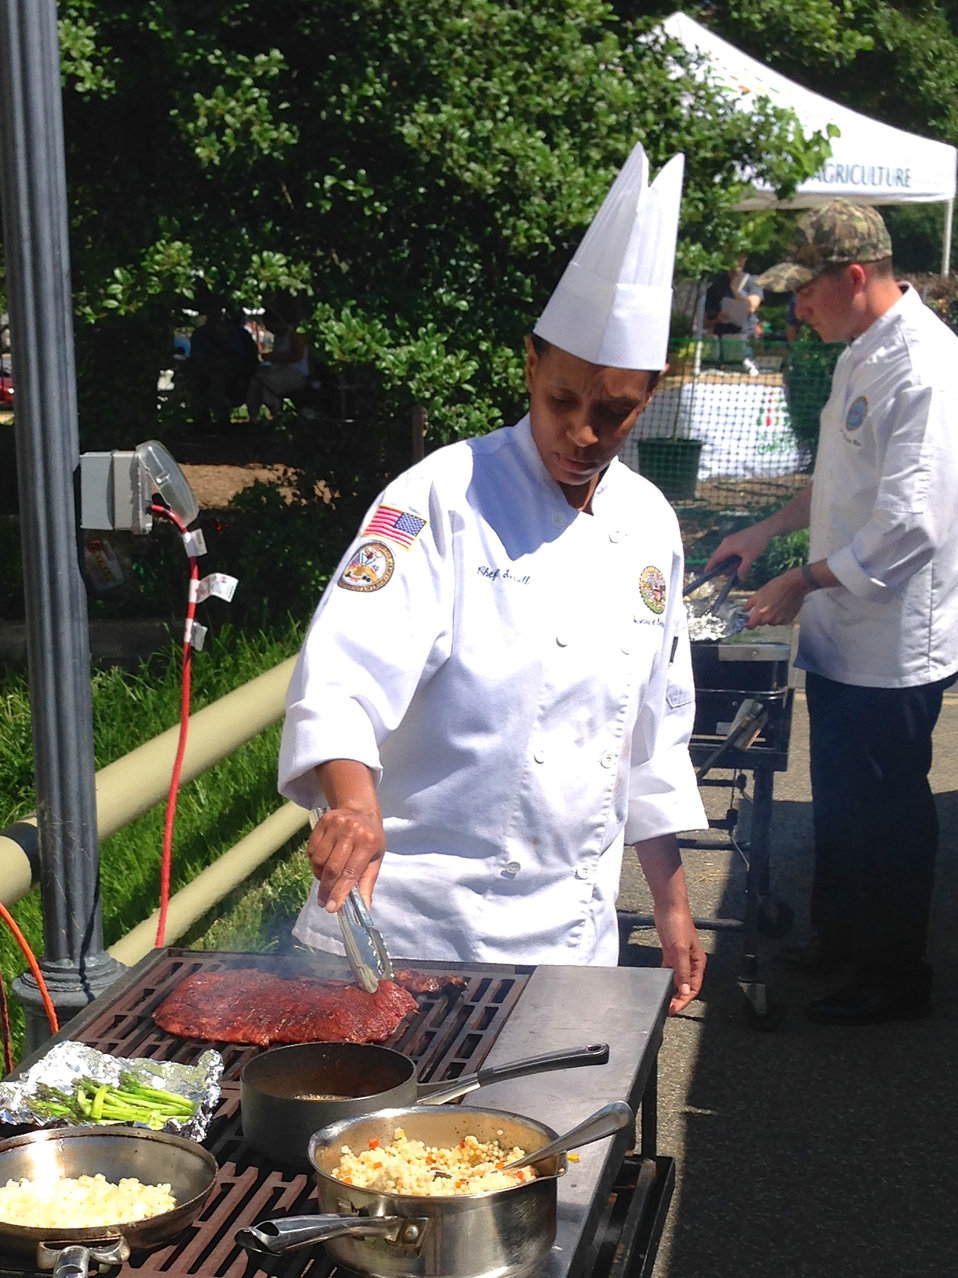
Winner of the BBQ Battle Chef and Army Sergeant Monica Sorrell works the grill during the competition

U.S. Army Chef, Sergeant Monique Sorrell was the winner of the U.S. Department of Agriculture's (USDA) Barbecue Battle held on the opening day of USDA Farmers Market in the east parking lot of USDA on Friday, Jun. 6, 2014. She served cocoa-rubbed flank steak, mint-infused couscous and fresh asparagus from the USDA Farmers Market.